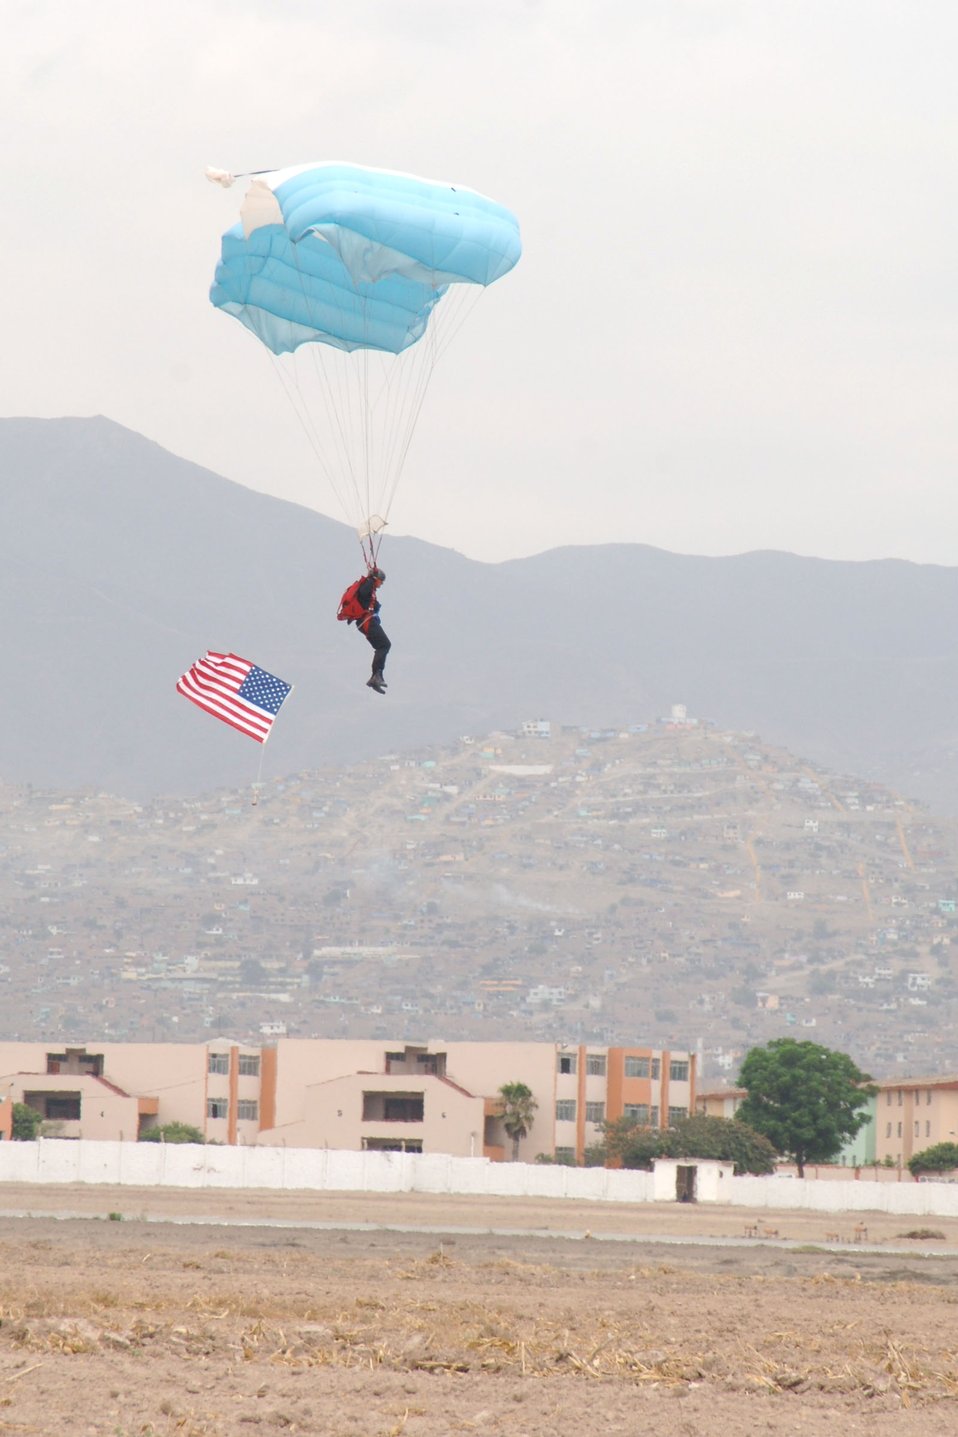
Airmen kick off part two of Falcon Condor 2007

A Peruvian special forces member lands waving the U.S. flag to symbolize the bond between the U.S. and Peru after jumping from a U.S. C-130 Hercules during a joint air show at Las Palmas Air Force Base in Lima, Peru. Falcon Condor 2007 is a joint exercise and air show that directly supports the U.S. Southern Command's engagement goals.